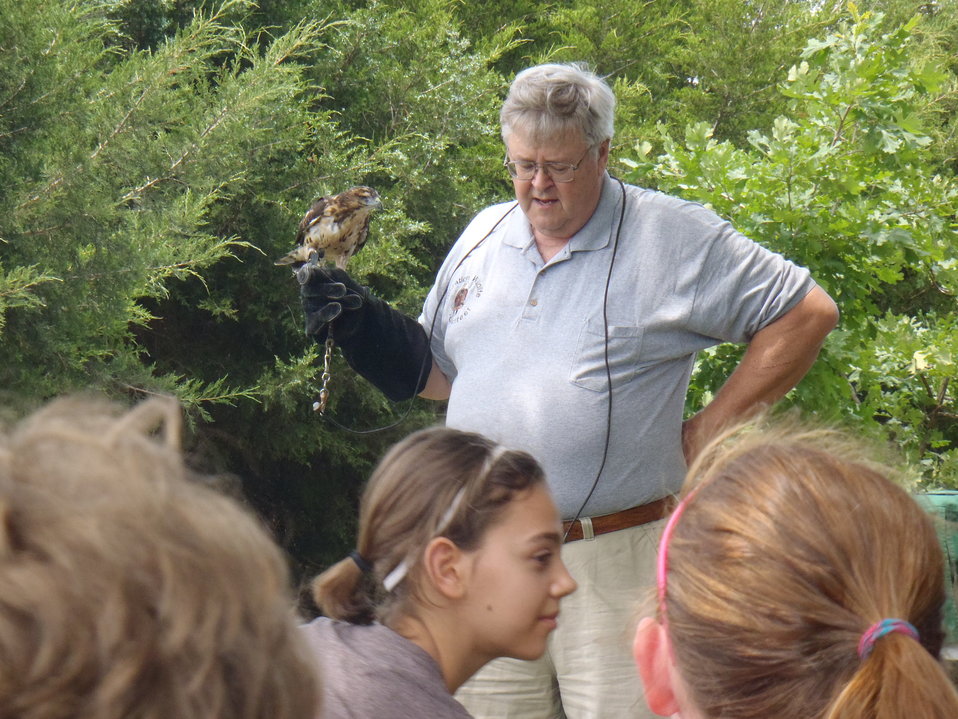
International Migratory Bird Day 2012

Marais des Cygnes National Wildlife Refuge with Operation Wildlife Presentation